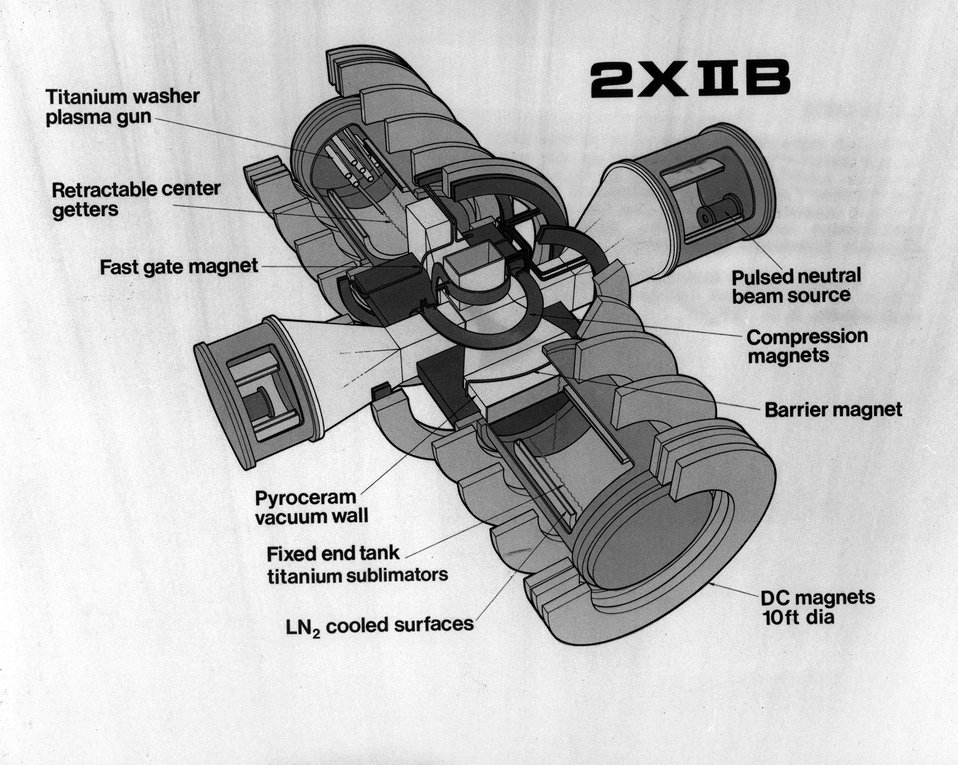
2XIIB....A more powerful version of the 2XII is the 2XIIB under construction. Circa 1974.